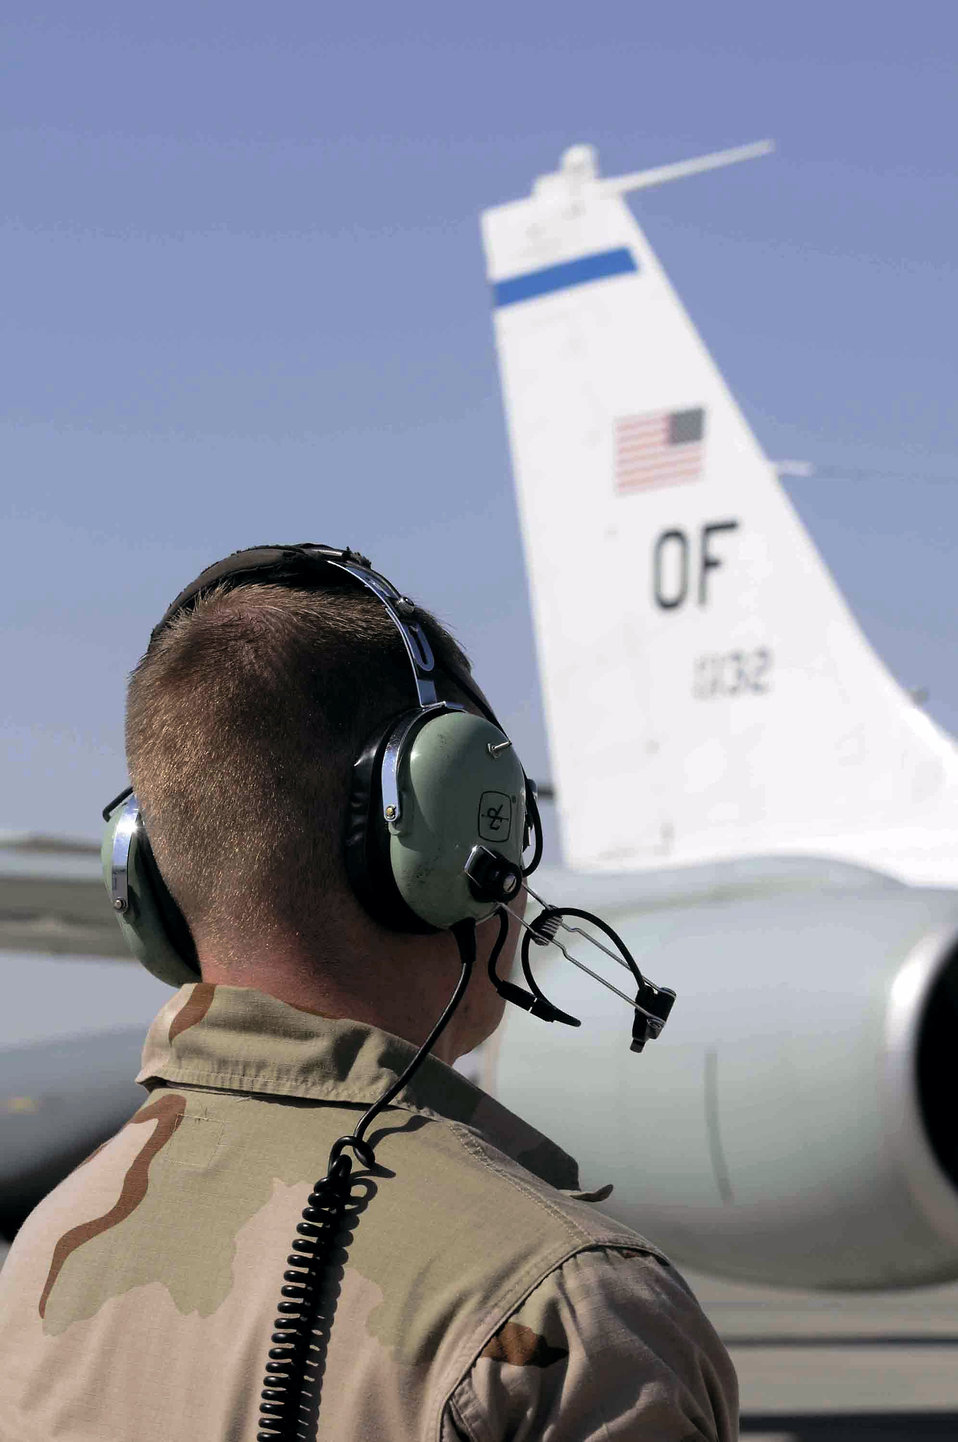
RC-135 surpasses 50,000 flying-hour mark

Senior Airman Joshua Sexton communicates with an RC-135 Rivet Joint pilot March 12 pilot at a Southwest Asia air base. Airman Sexton is the eyes and ears for the outside of the aircraft while pilots perform pre-flight checks. Airman Sexton, assigned to the 379th Expeditionary Aircraft Maintenance Squadron, is deployed from Offutt Air Force Base, Neb.